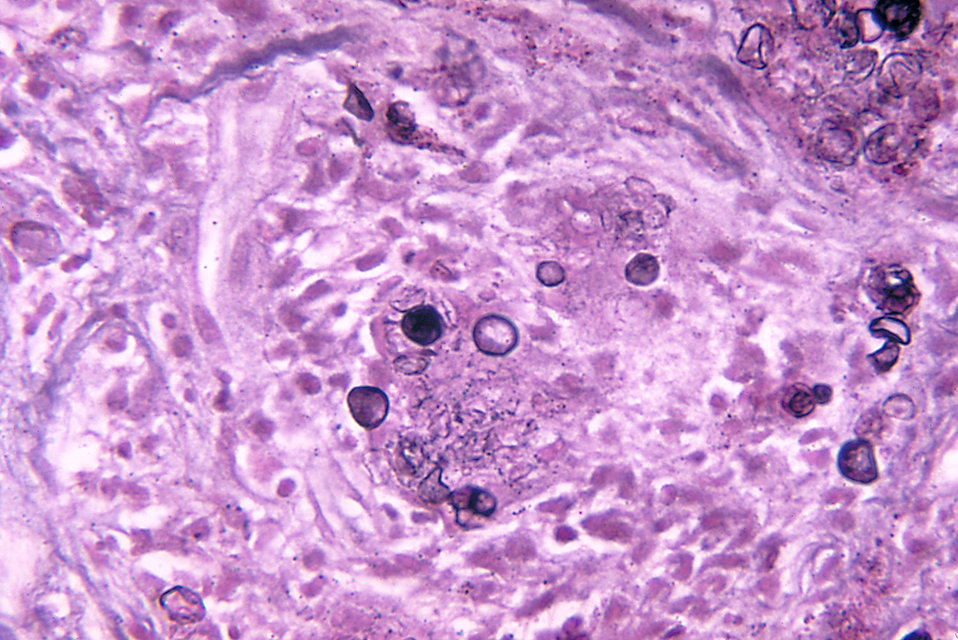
This photomicrograph depicts the presence of Prototheca wickerhamii in a case of protothecosis.